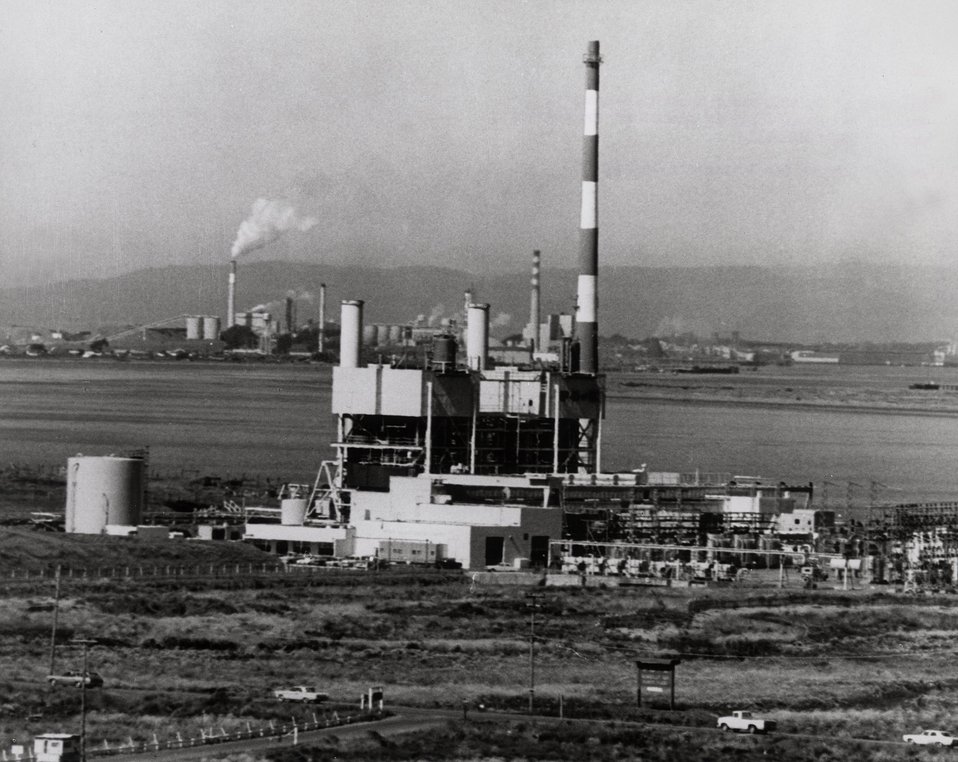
Humbolt Bay Power Plant